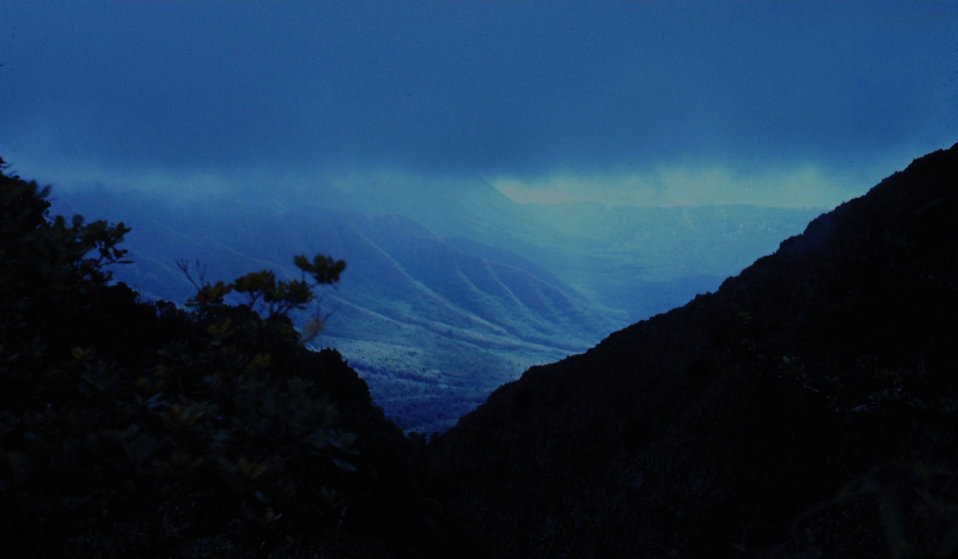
Waianae coast -southwest Oahu